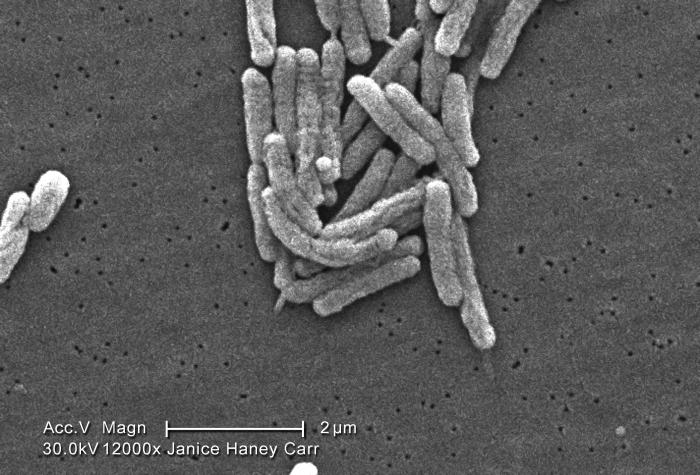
Under a high magnification of 12000X, this scanning electron micrograph (SEM) depicted a number of Gram-negative Legionella pneumophila bacteria. Please see PHIL 11092 through 11152 for additional SEMs of these organisms, specifically PHIL 11114 for a colorized version of this image. Note that a few of these bacteria are sporting their flagella, better visualized in the colorized version.